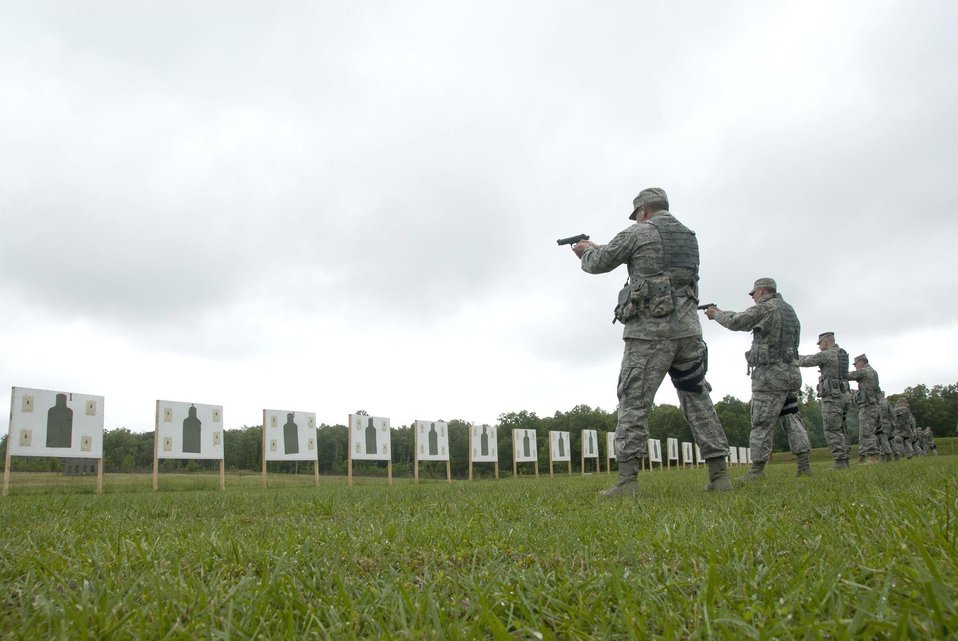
Ready. Aim. Fire!

Members of the Tennessee Air National Guard's 134th Security Forces Squadron requalify on the Beretta M9 handgun May 16, 2011, at Arnold Air Force Base, Tenn.